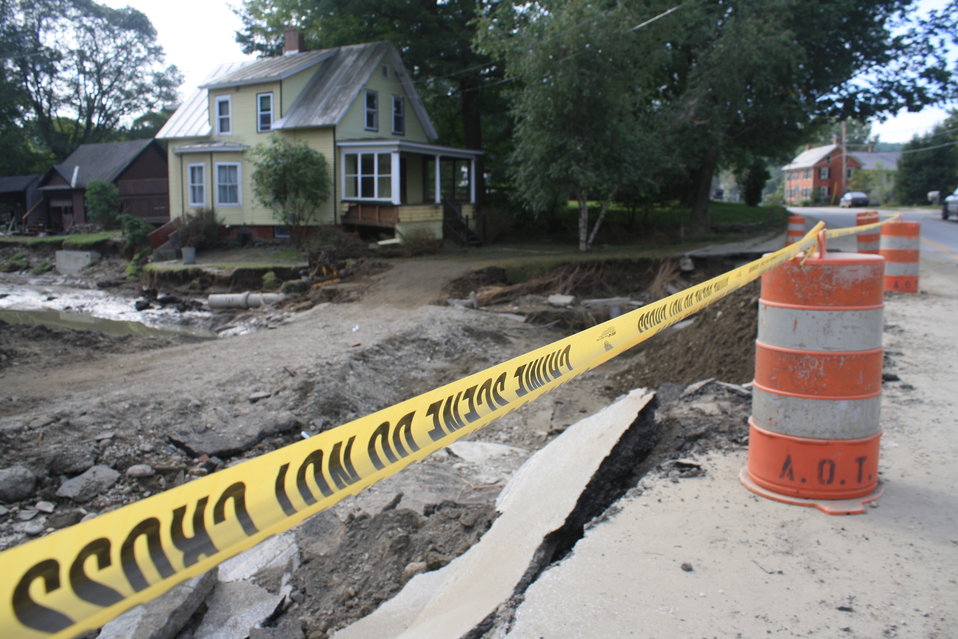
Hurricane Irene damage to road, homes in Bethel, VT

Homes and VT 107 in Bethel, VT near the White River were damaged by quickly rising water during the Hurricane Irene flood event.